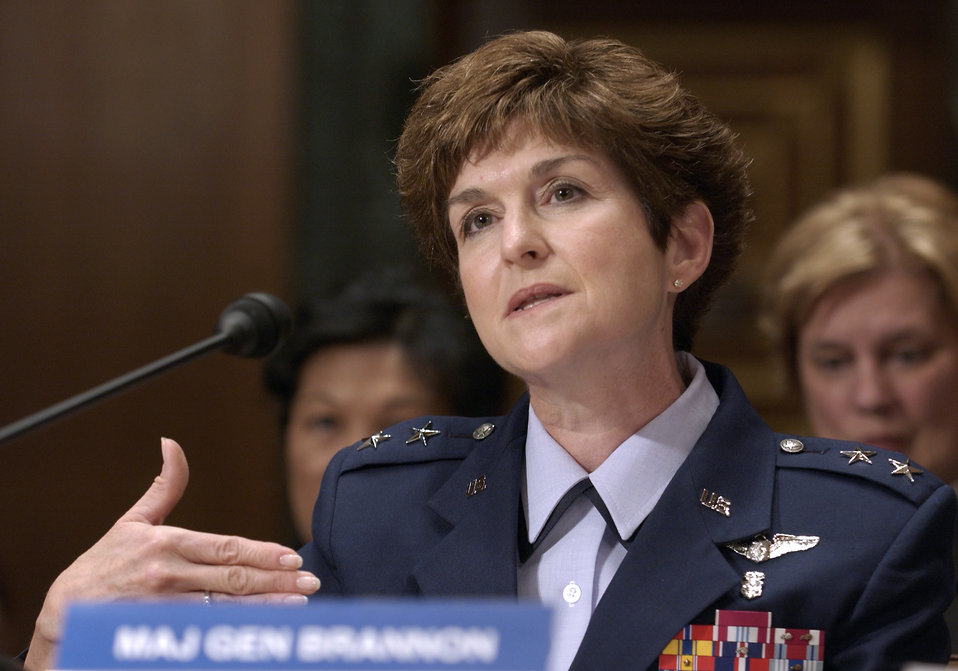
Air Force meeting nurse recruiting and retaining challenges

WASHINGTON -- Maj. Gen. Barbara C. Brannon testifies before the Senate Appropriations Committee subcommittee on defense May 10. The subcommittee convened to hear testimony on the fiscal 2006 medical program. General Brannon is the Air Force's assistant surgeon general for nursing services.